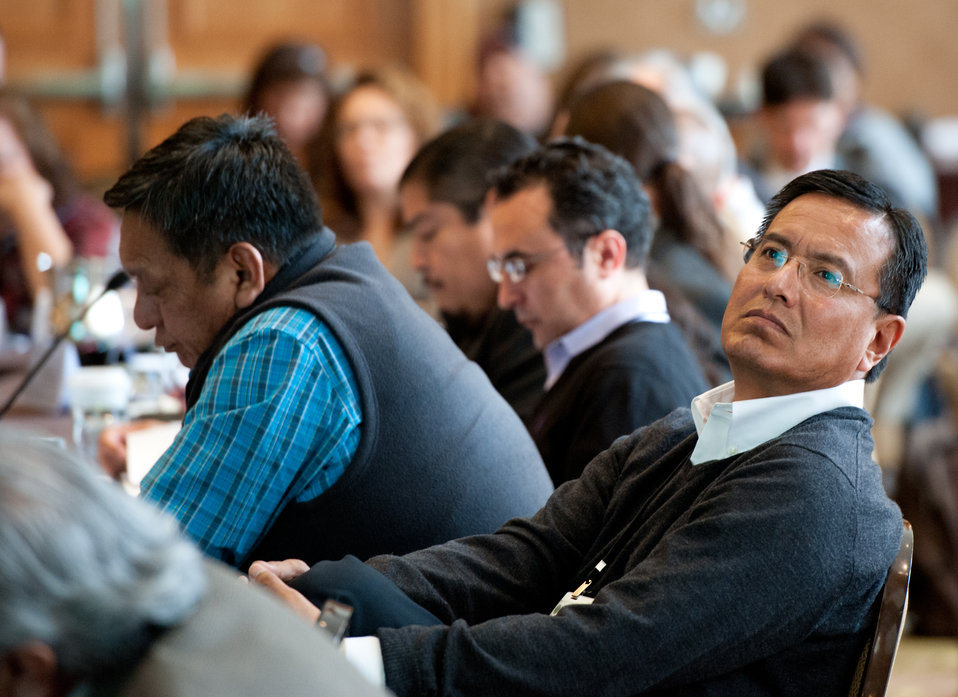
Indian Transmission Forum

Attendees at the DOE Office of Indian Energy Tribal Leader Energy Forum on transmission held February 2012 in Denver, Colorado.